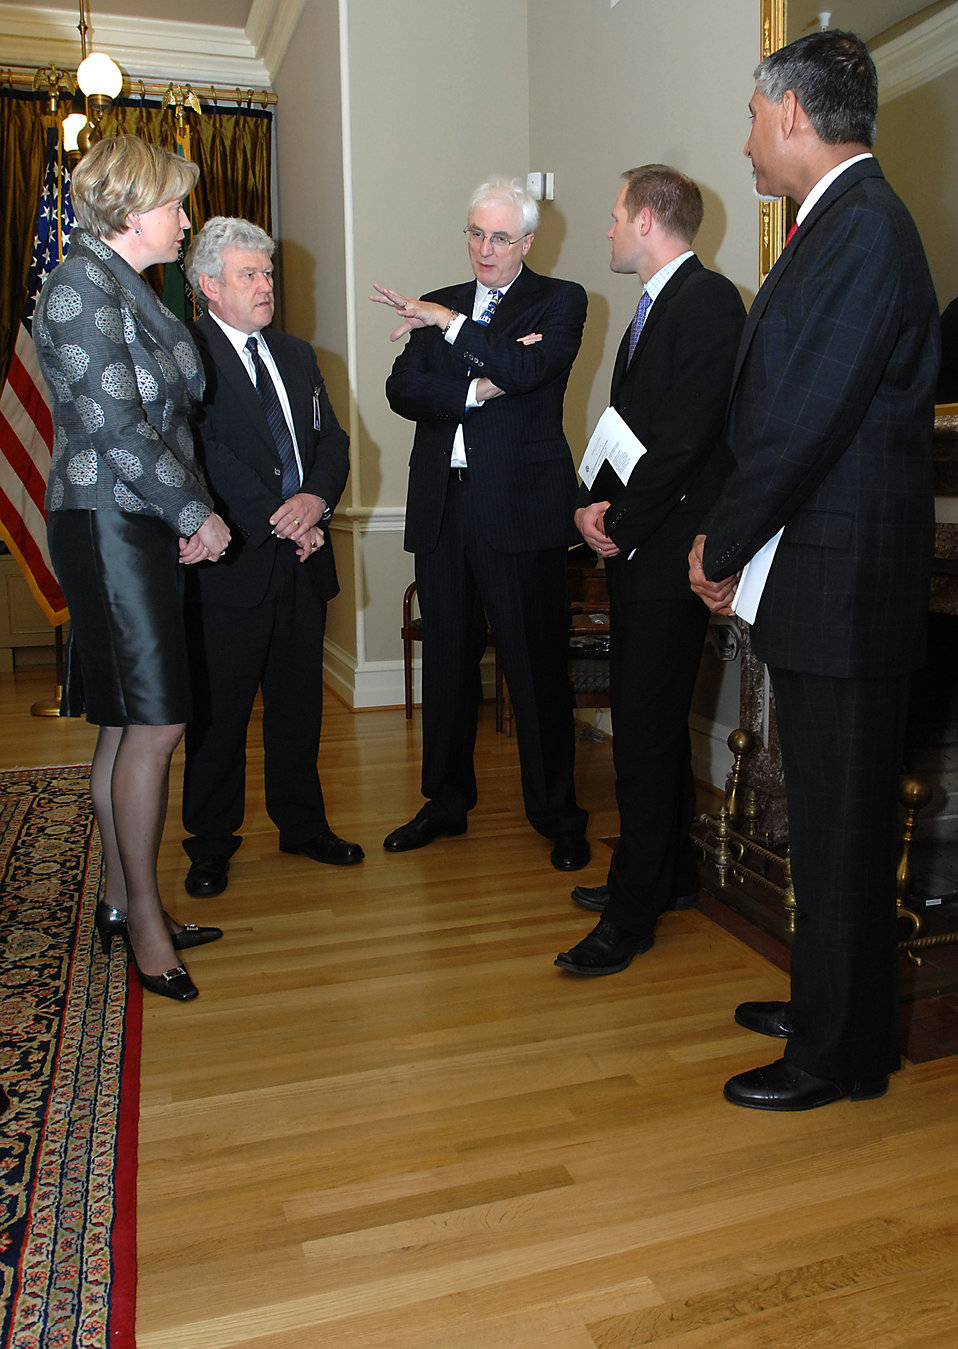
Deputy Prime Minister of Ireland Mary Coughlan

On April 20, 2009, Secretary Geithner met with Deputy Prime Minister of Ireland Mary Coughlan at Treasury.